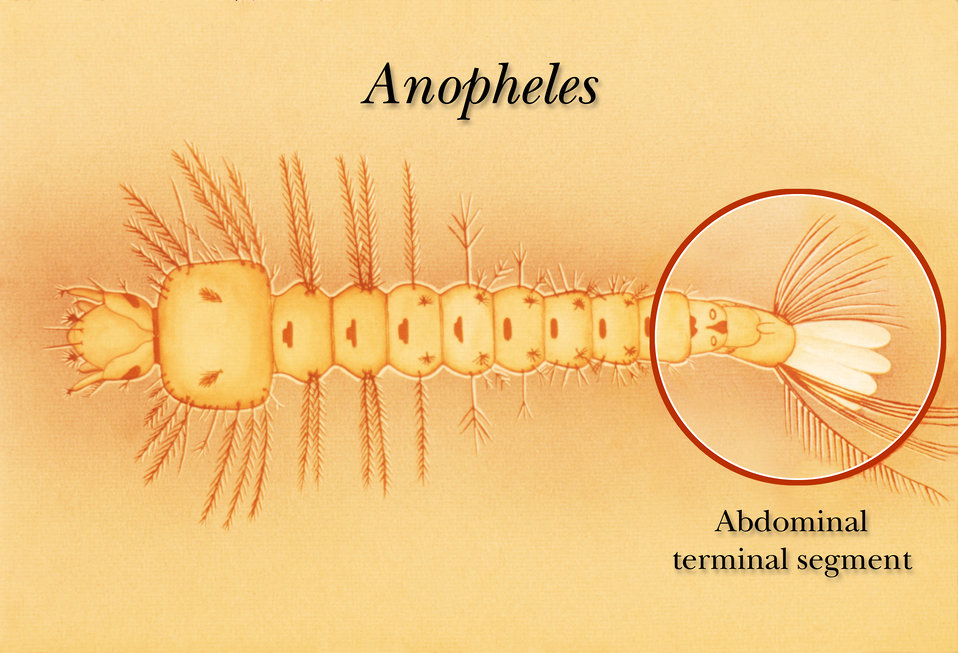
Drawing identifying the terminal abdominal segments of an Anopheles mosquito larva.